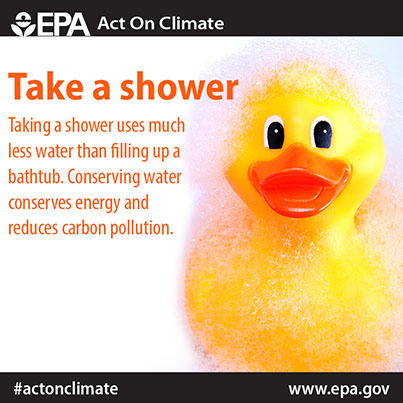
Take a shower

Try a short shower instead of a bath. Taking a shower uses much less water than filling up a bathtub. In fact, a shower only uses 10 to 25 gallons of water, while a bath uses up to 70 gallons! To save even more water and energy, keep your shower under five minutes long —try timing yourself next time you hop in!